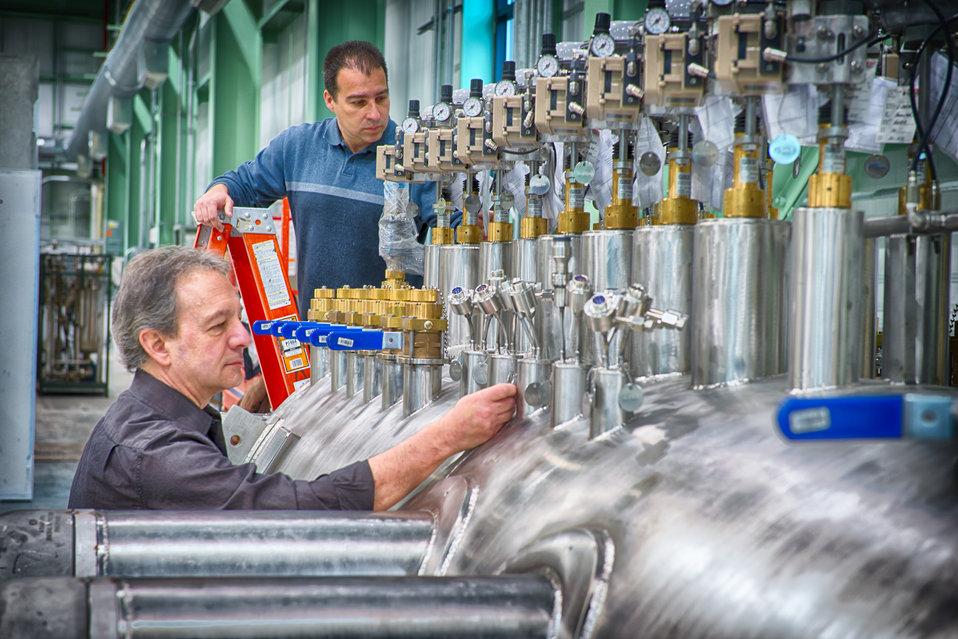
Cryomodule Test Facility (CMTF) distribution box for cryogenic systems at Fermi National Accelerator Laboratory.
The CMTF houses radiofrequency systems and a cryogenic plant, crucial components for testing superconducting radio-frequency cavities for the SRF Accelerator Test Facility at the new Muon Lab.